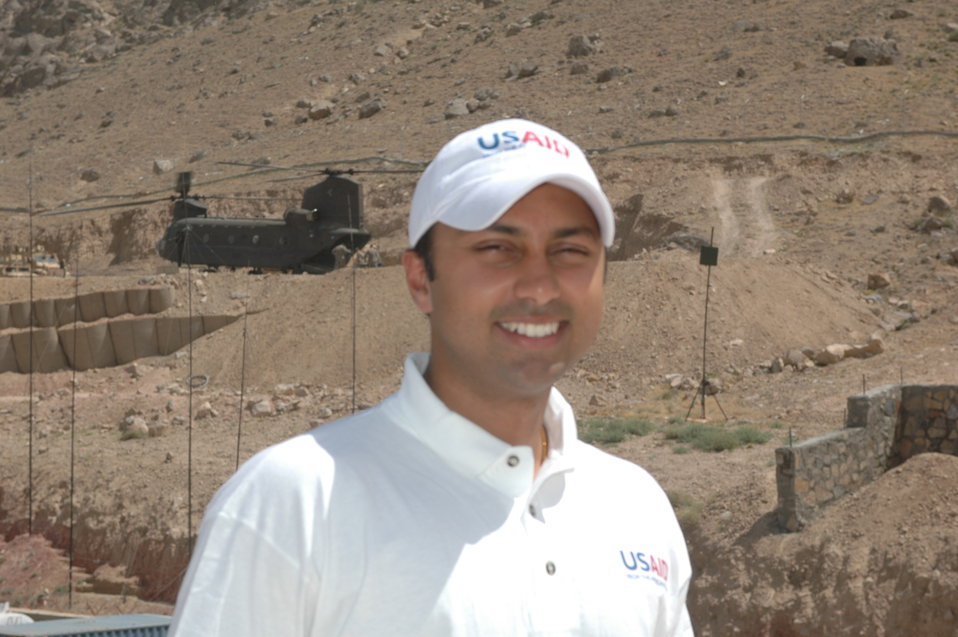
Dr Shah Visits Kandahar April 9, 2010